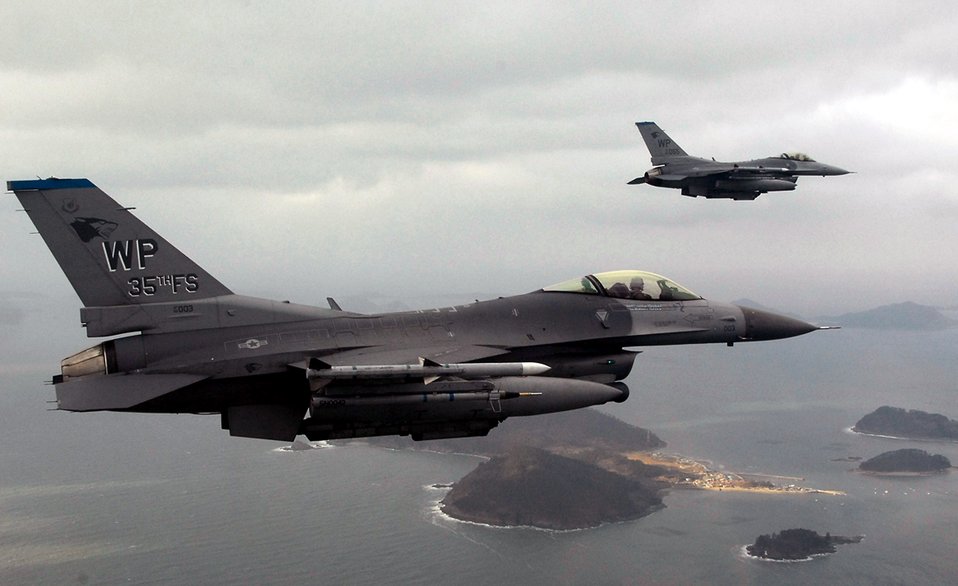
Falcons fly over South Korea

F-16 Fighting Falcons fly on a training mission Jan. 30 over the South Korean peninsula. Pilots assigned to the 35th Fighter Squadron from Kunsan Air Base, South Korea, use training missions to simulate actual conditions they may face in combat and keep their warfighting skills honed.